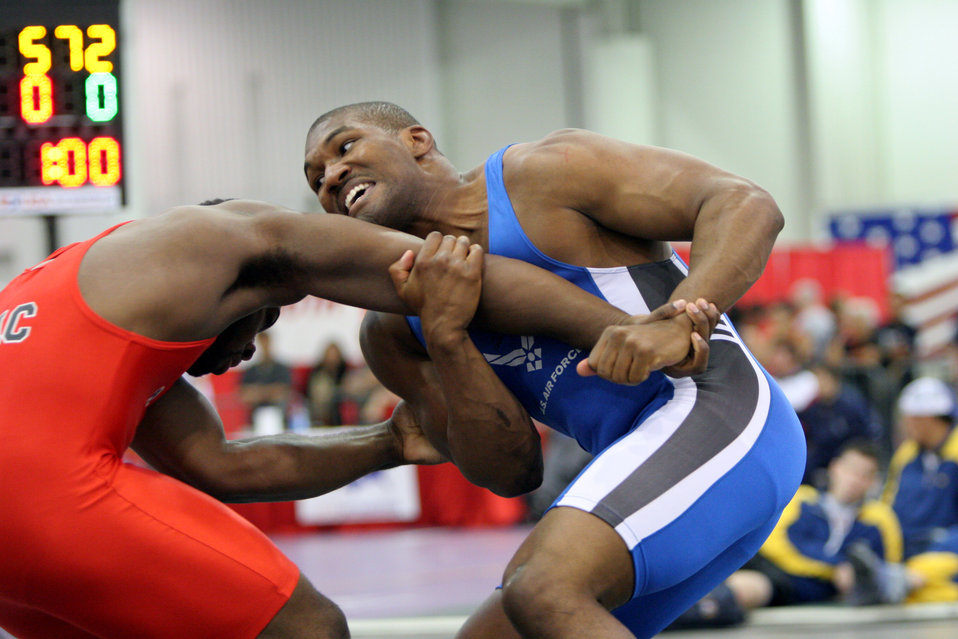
Air Force wrestlers take two medals at nationals

LAS VEGAS -- Lorenzo Peterson (right), a 211.2-pound division Greco-Roman wrestler, grapples with his opponent, R.C. Johnson of the New York Athletic Club, during a match at the 2005 U.S. Nationals Wrestling tournament held here April 29. The Air Force team won first runner-up in the team standings for the tournament.